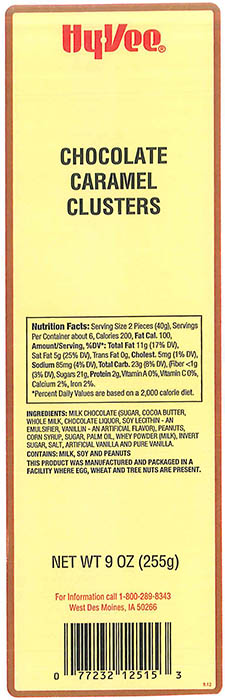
RECALLED – Chocolate Caramel Clusters and Chocolate Covered Caramels

November 11, 2013 – Product Recall – Palmer Candy Company Voluntarily Recalls HyVee Chocolate Caramel Clusters and HyVee Chocolate Covered Caramels Due to Undeclared Peanut Allergen.